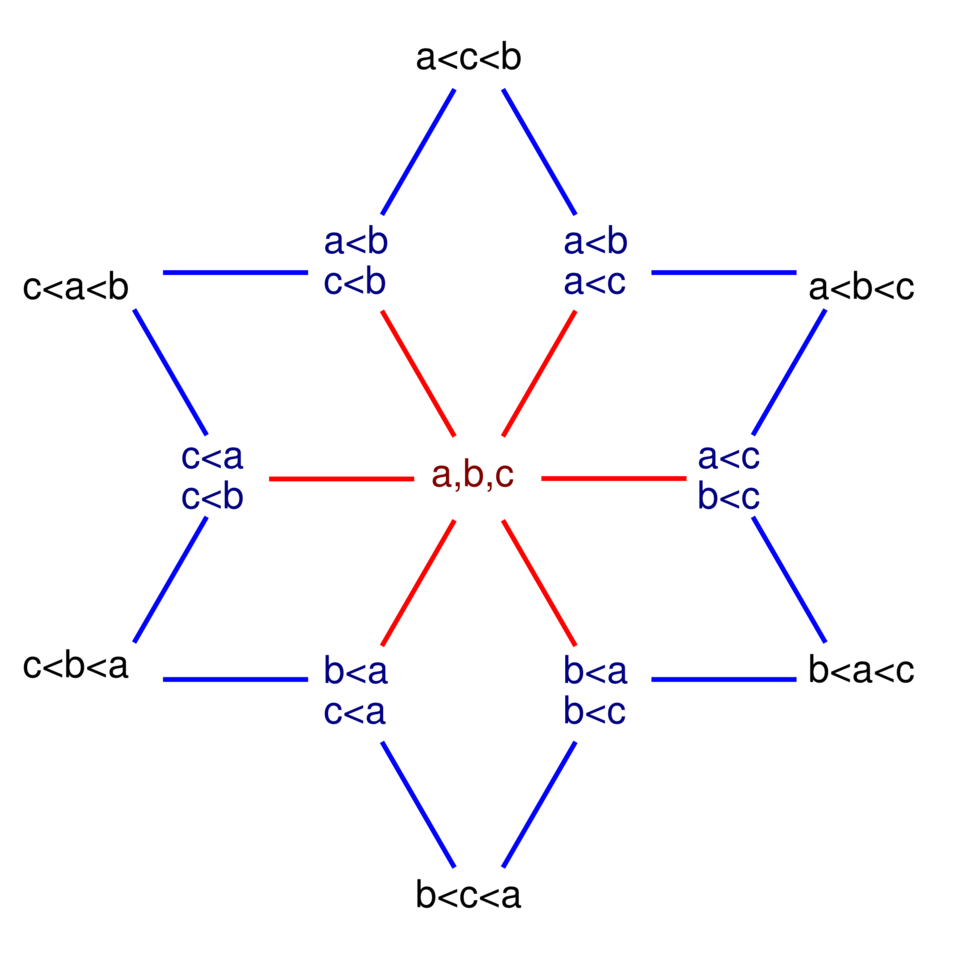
The 13 possible strict weak orderings on a set of three elements.